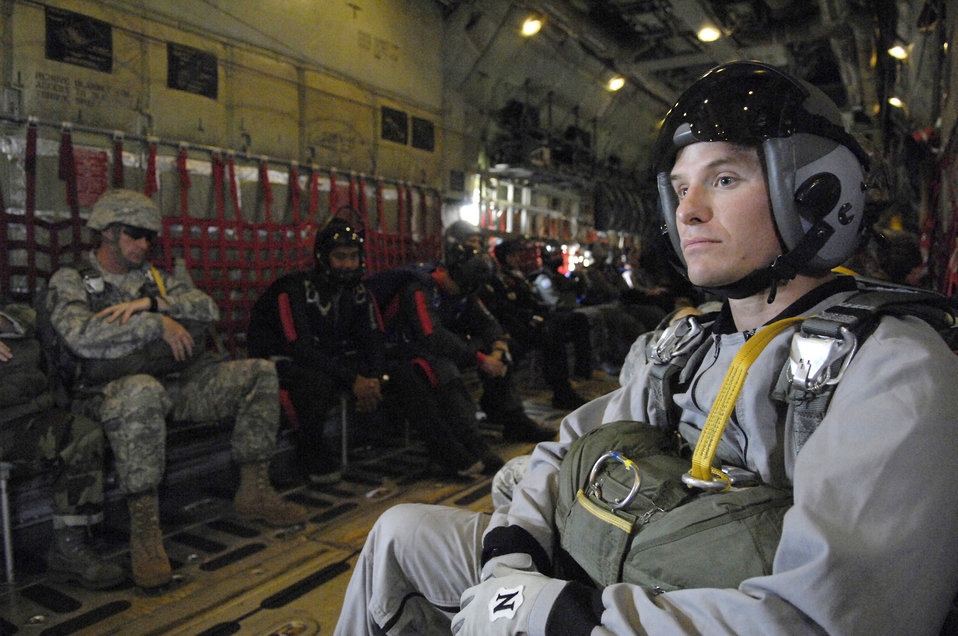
Waiting to jump

Staff Sgt. Brian Daubert sits inside a Marine C-130 Hercules July 23 as it flies over Lackland Air Force Base, Texas. Sergeant Daubert and other Airmen from the 342nd Training Squadron at Lackland along with Marines, Soldiers and a Royal Air Force exchange officer conducted competency airborne training. Aircrew is from the Marine Aerial Refueler Transport Squadron 234 at Joint Reserve Base/Naval Station Fort Worth, Texas.